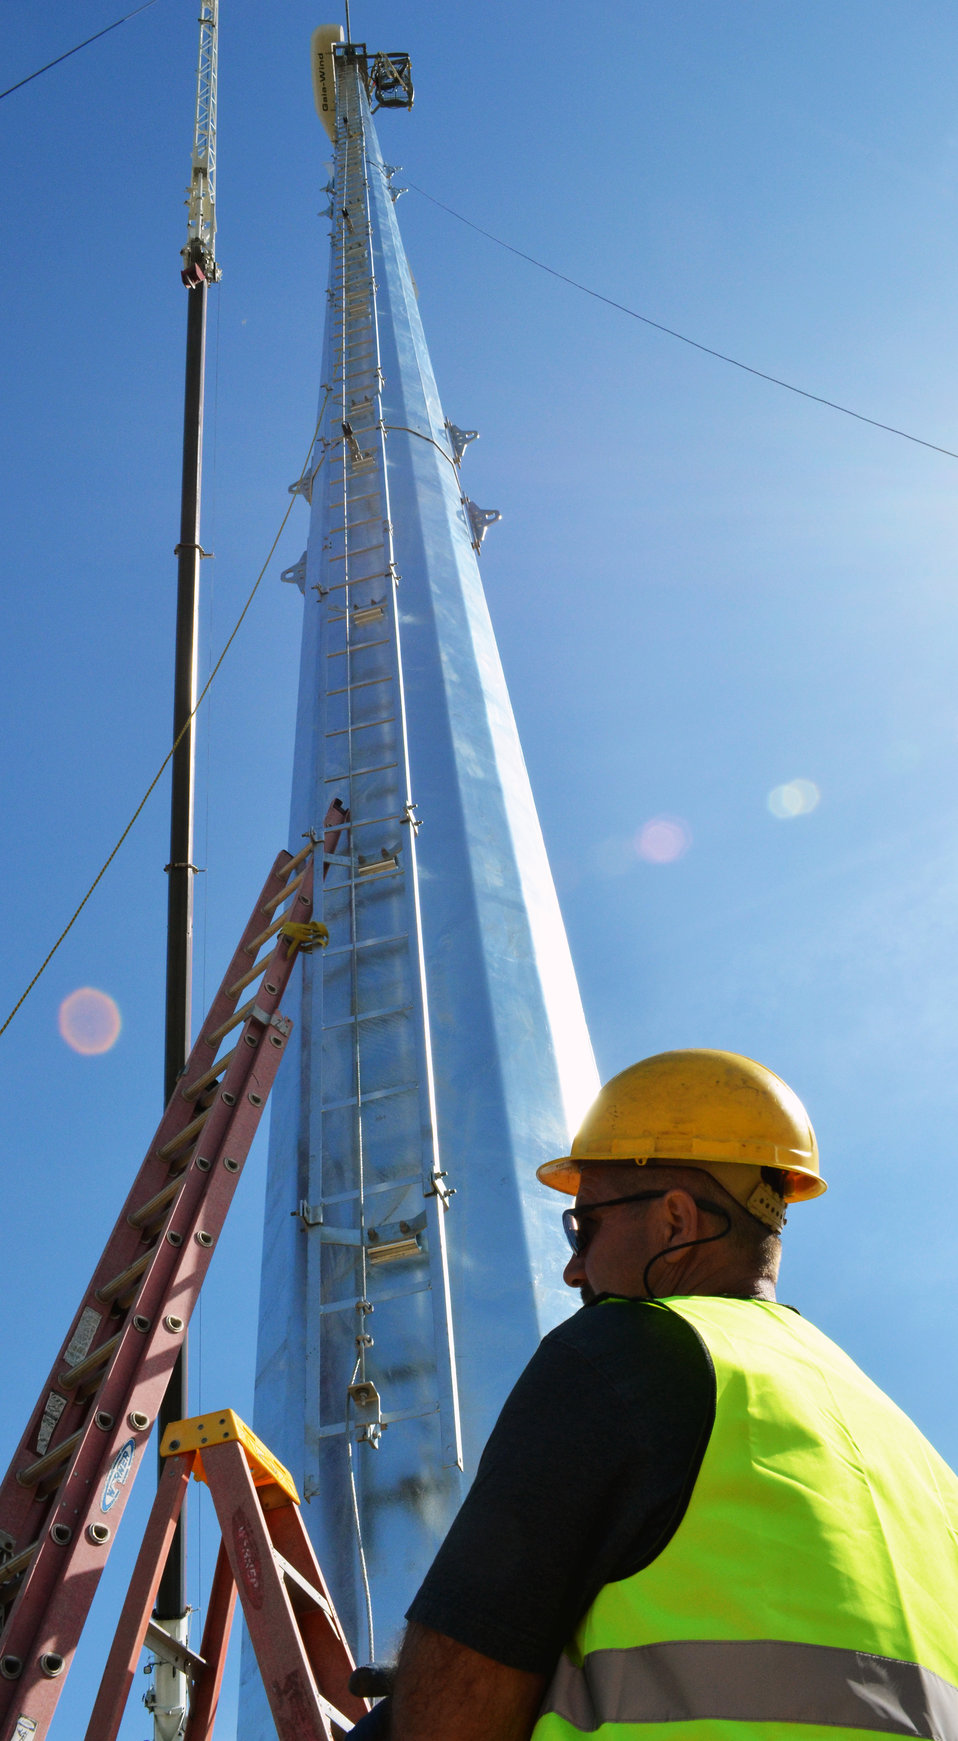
Shining tower of power

The 120-foot galvanized steel tower for the wind turbine is erected March 13, 2013, at Black Butte Lake, a U.S. Army Corps of Engineers Sacramento District park near Orland, Calif. Expected to go online within 30 days, the turbine can generate 11 kilowatts of energy and will help supply the needs of campers in this U.S. Army Corps of Engineers Sacramento District park.